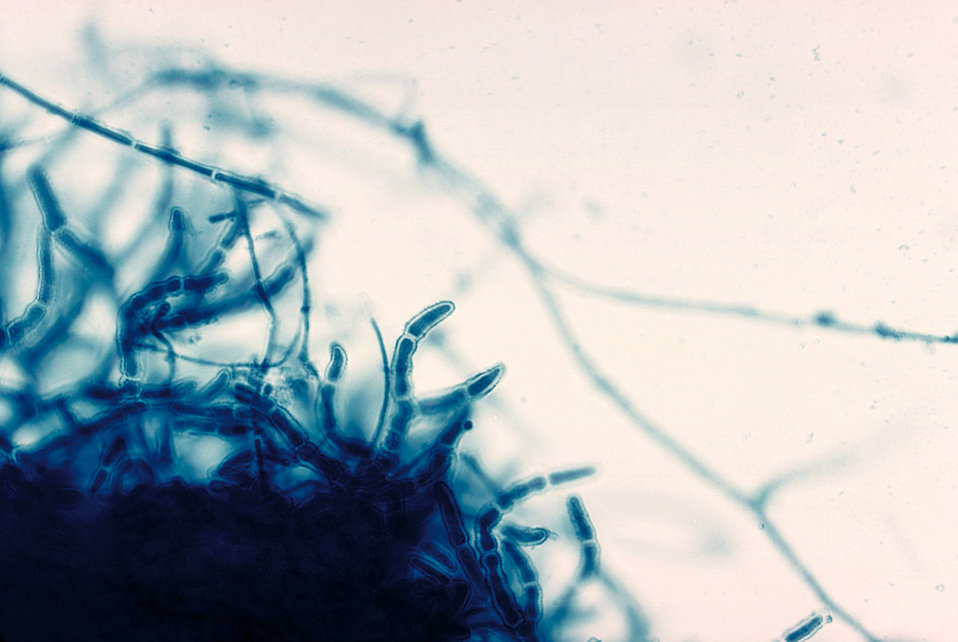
This image shows the edge of a cleistothecium of the fungi Arthroderma incurvata from a soil and hair plate culture.